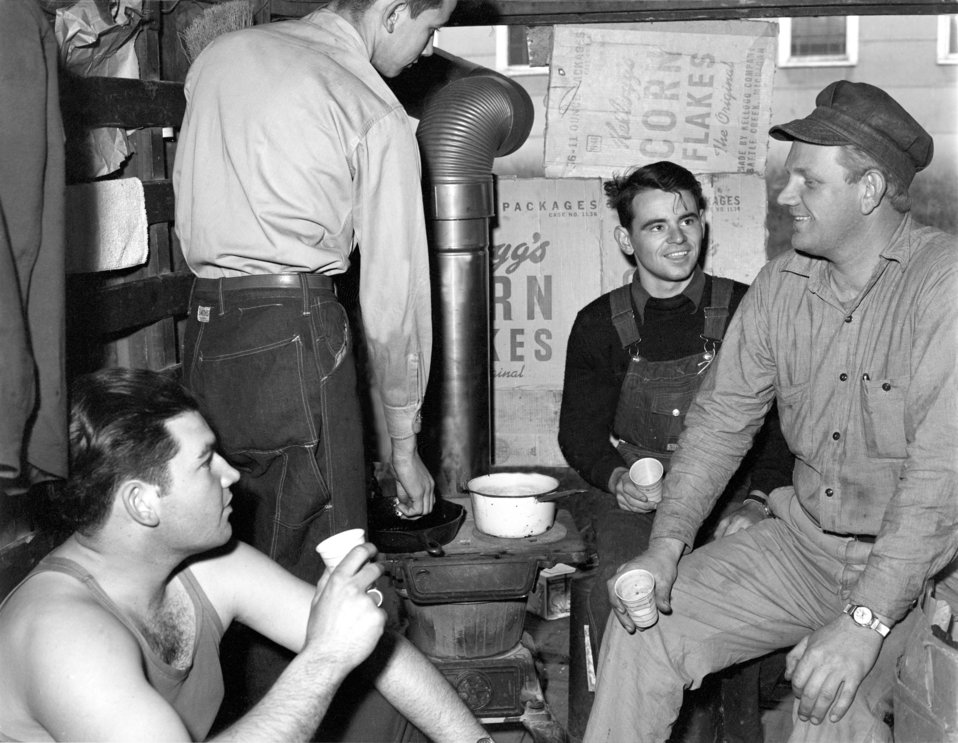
War Assets Auto Sale Oak Ridge 1947

3293-3cp DOe photo Ed Westcott 2-13-1947 E.C. Cravens, Fred Smith Jr., W.F. Smith, and Danny W. Clark Oak Ridge Tennessee